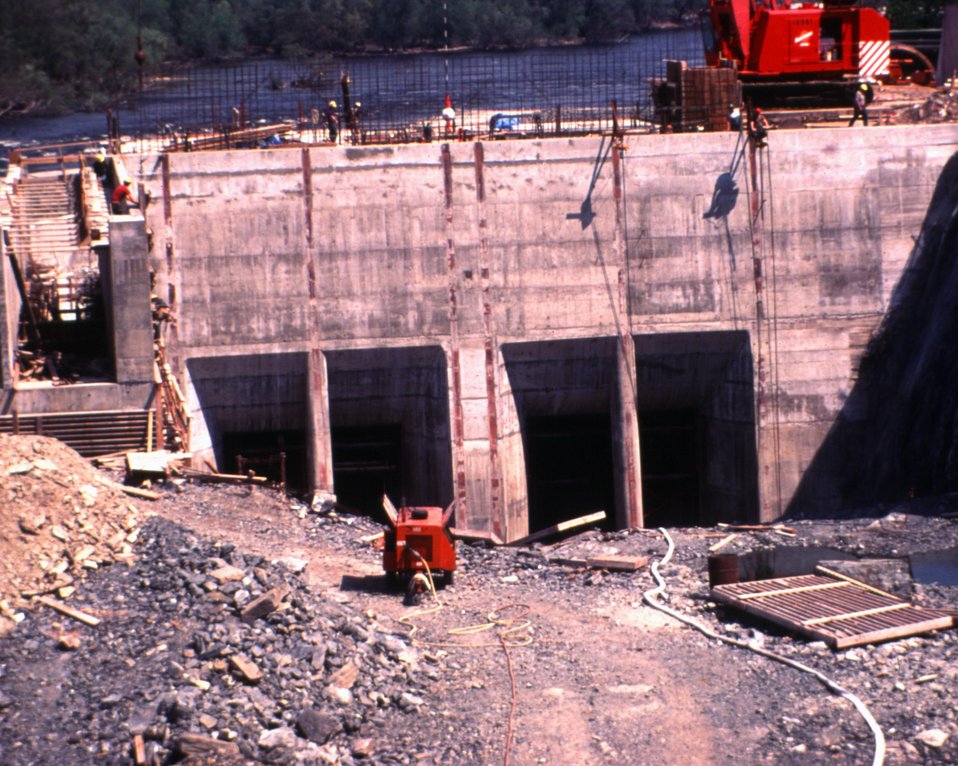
GENERAL VIEW OF POWERHOUSE CONSTRUCTION.

THE DOE SMALL-SCALE HYDROPOWER PROGRAM CONSISTS OF 19 PROJECTS AND DEMONSTRATES THE VIABILITY OF SMALL-SCALE HYDRO-POWER WITH AVAILABLE TECHNOLOGY. THE BOOTT MILLS PROJECT, BEGUN IN OCTOBER, 1983, WENT ON LINE IN NOVEMBER, 1985. UTILIZING TWO KAPLAN TURBINES THAT PRODUCE A MAXIMUM OF 15,000 KILOWATTS, THE DAM PROVIDES A GROSS HEAD OF 35 FEET WITH AN ANNUAL STREAM FLOW OF 4,500 CFS.